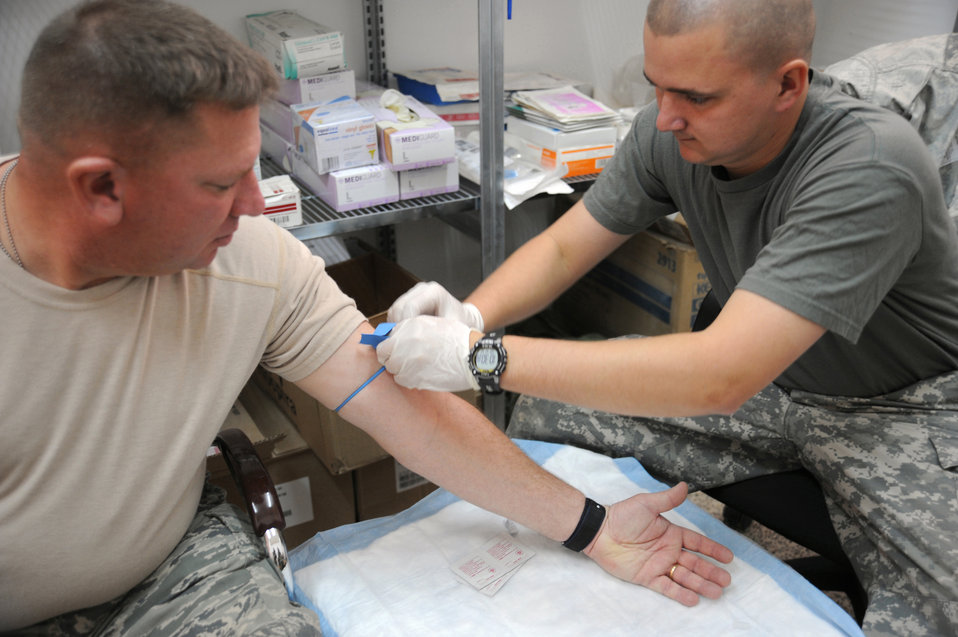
Joint taskings a way of life in A.O.R.

Chief Master Sgt. Tim Ryan (left), receives medical treatment from Army Spc. Tommy Turner Dec. 13, 2009, at Camp Taji, Iraq. Chief Ryan and Specialist Turner are assigned to the 732nd Expeditionary Security Forces Squadron Detachment 3.